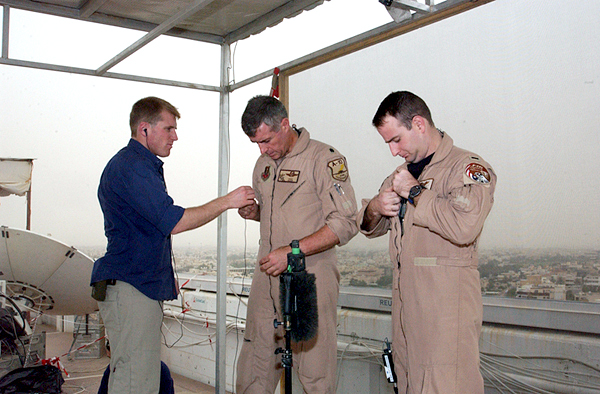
Miked up

OPERATION IRAQI FREEDOM -- A sound technician assists Lt. Col. Mike Webb and 1st Lt. Chad Martin, 332nd Air Expeditionary Wing fighter pilots, with their microphones prior to a live satellite feed from Kuwait City.